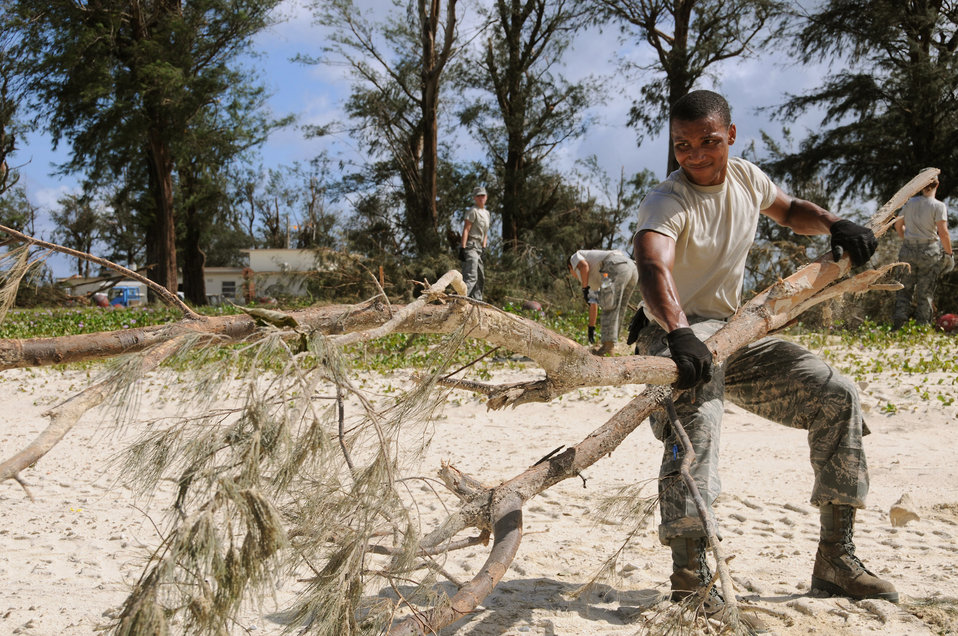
Airmen clean up after typhoon

Airman 1st Class Tony Mathis drags a fallen tree to a collection point at the Okuma Recreation Area Sep. 2, 2010. More than 100 Airmen volunteered to help clean up the debris left when Typhoon Kompasu struck Okinawa Aug. 31.